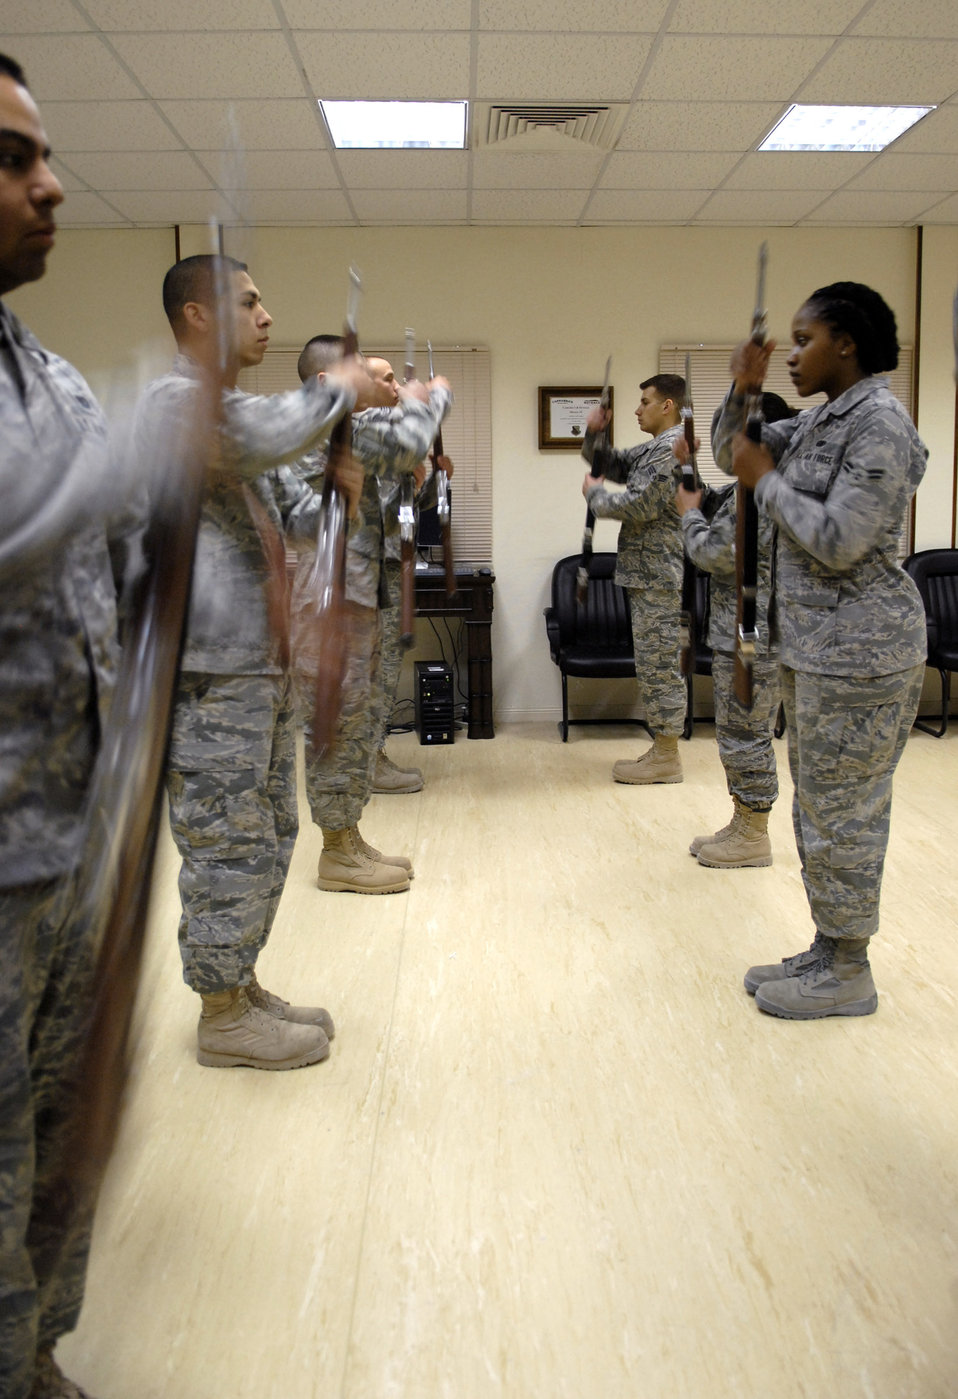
The honor guard makes their practice perfect

Members of the base honor guard team practice movements and perform rifle drills April 7 at an air base in Southwest Asia. Airmen from different units in the 379th Air Expeditionary Wing volunteer for the team and perform for various events such as change of commands, graduations, POW/MIA ceremonies and posting of the colors.